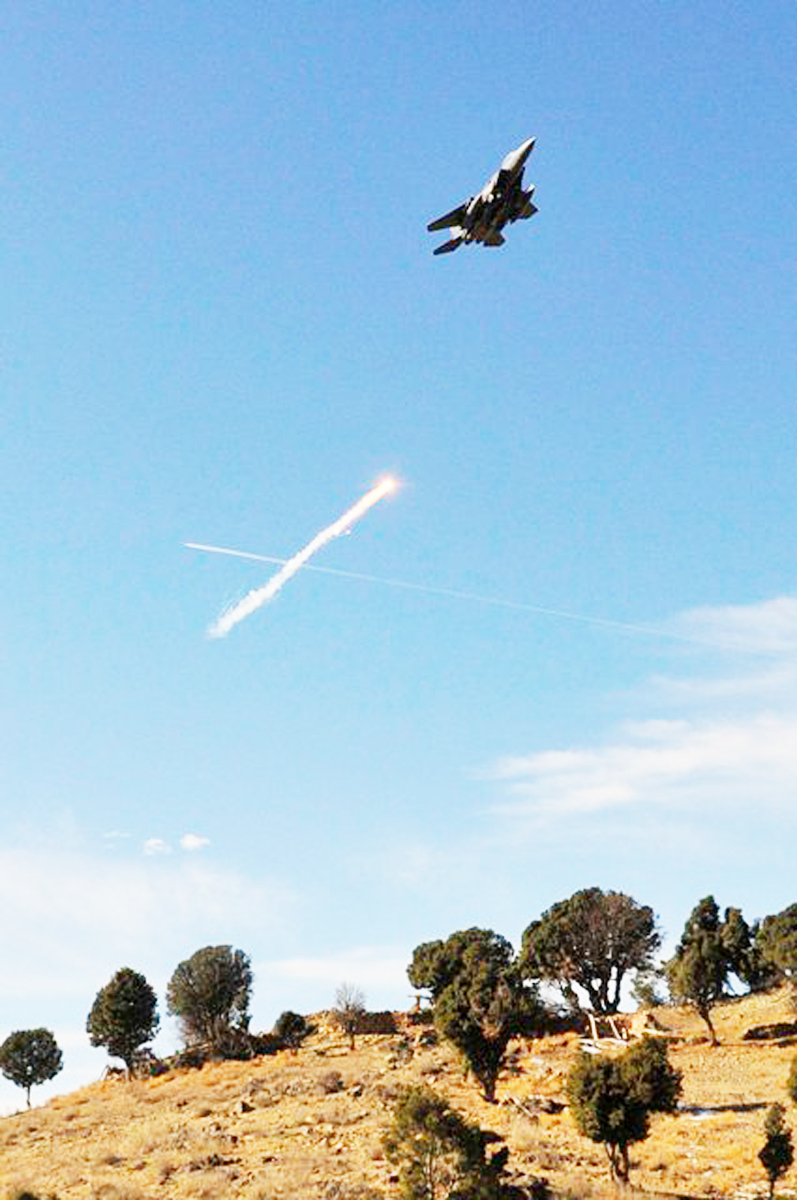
Taliban safehouse, gone!

An F-15E Strike Eagle drops a flare Dec. 18, 2009, during the demolition of the